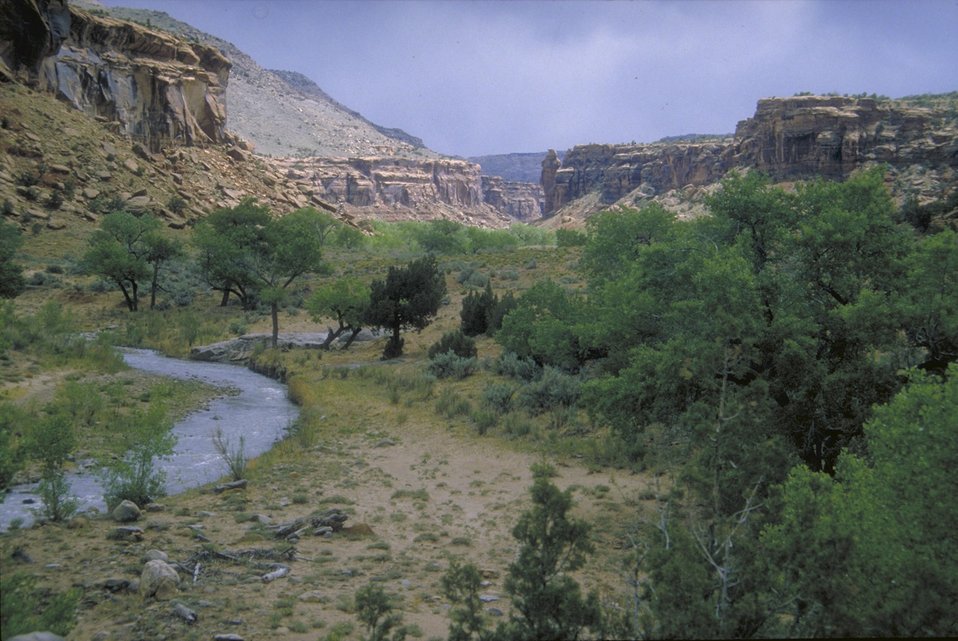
Scenic of Dominguez Creek.